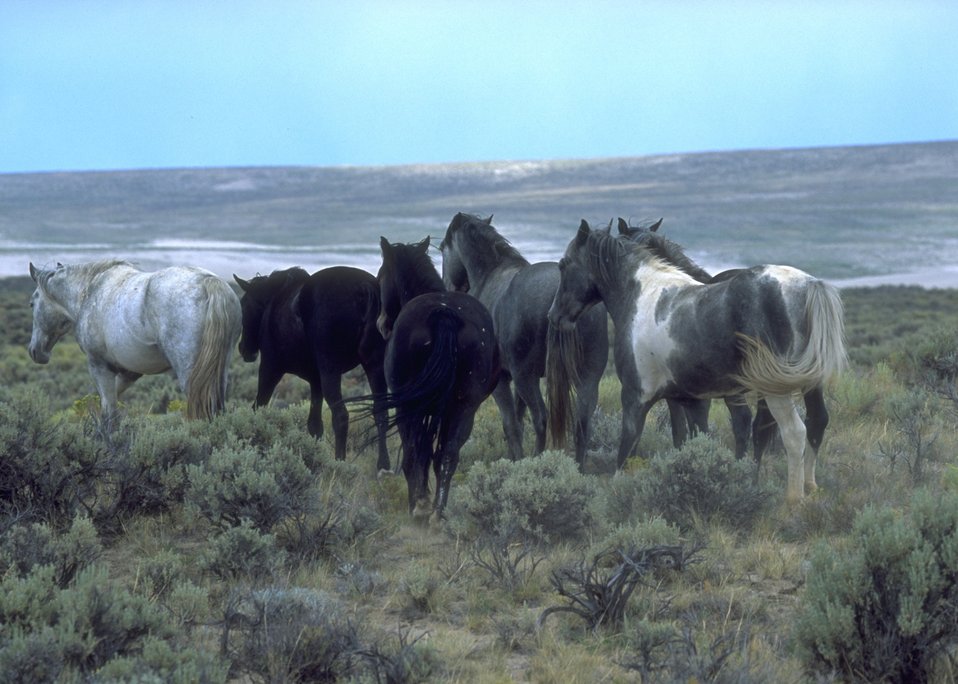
Wild horses, Rock Springs Field Office.